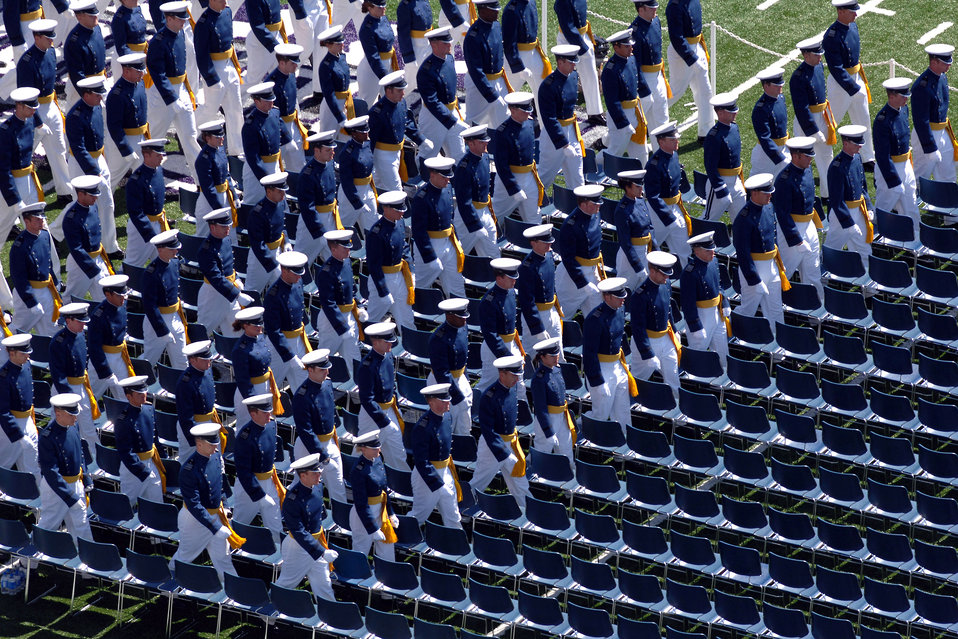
From cadet to lieutenant

Members of the U.S. Air Force Academy Class of 2007 march onto the Falcon Stadium field to start the commencement ceremony May 30 in Colorado. The ceremony marks the culmination of four years at the academy and their transition from cadet to the Air Force's newest second lieutenants.